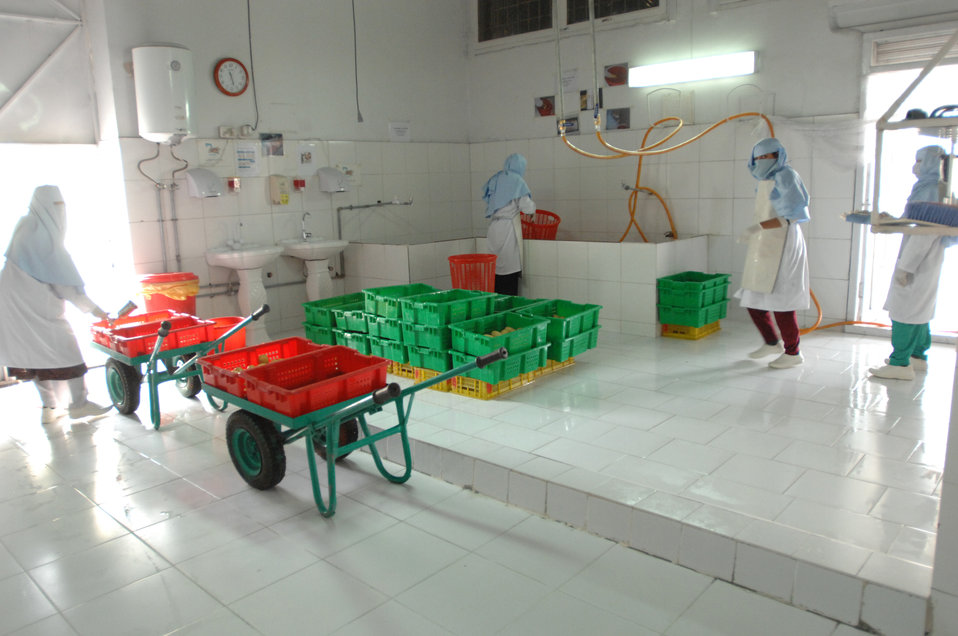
110209sv Shah250

Inside the Surkh Rod vegetable packing facility in Surkh Rod, Nangarhar Province, on Wednesday, February 9, 2011. (S.K. Vemmer/Department of State)